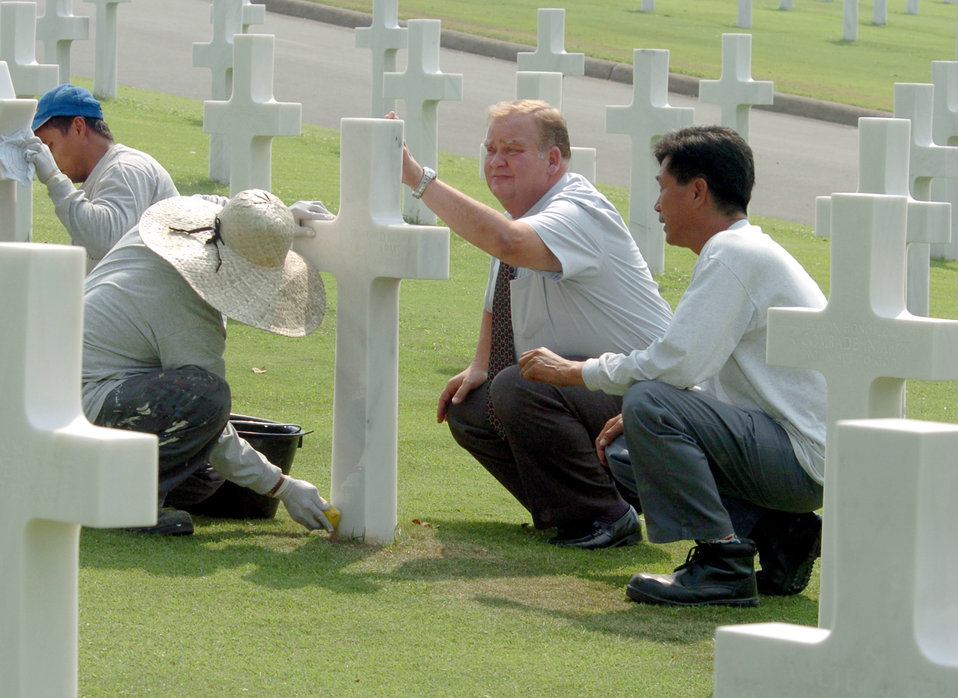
Living among fallen heroes

MANILA, Philippines -- (From left) Felix Cuario, Eduardo Sacendosillo, Dan Neese and Louie Santos clean marble headstones at the Manila American Cemetery and Memorial here. The cemetery is the final resting place for 17,206 Americans from World War II. A Wall of Missing is inscribed with 36,284 names.